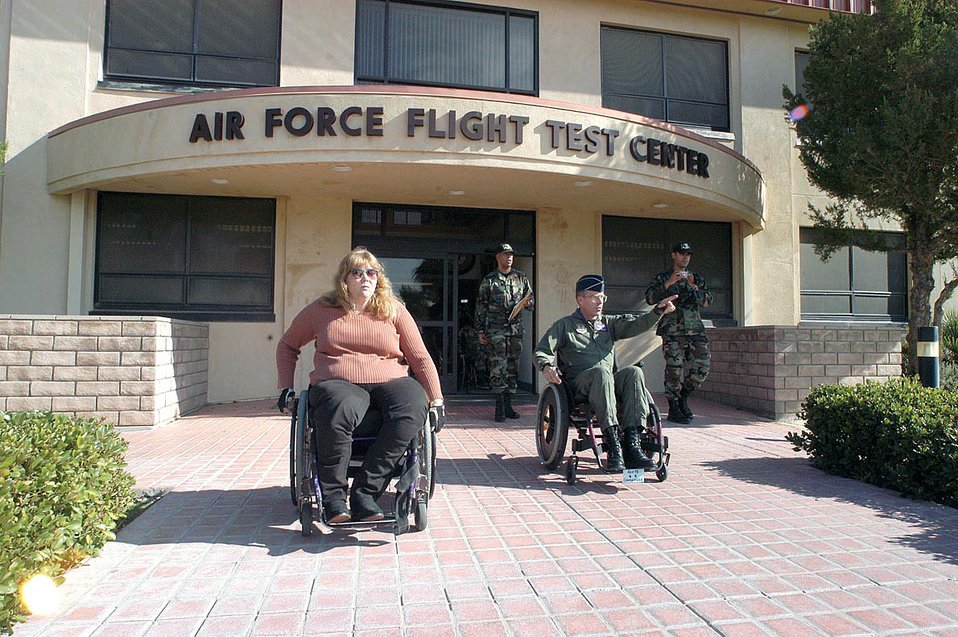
Edwards tests wheelchairs

EDWARDS AIR FORCE BASE, Calif. (AFPN) -- Maj. Gen. Curtis Bedke, Air Force Flight Test Center commander (right), and Donna Smith, 412th Test Wing engineering directorate senior resource advisor, take an outing together to experience the difficulties being in a wheelchair when accomplishing daily activities.